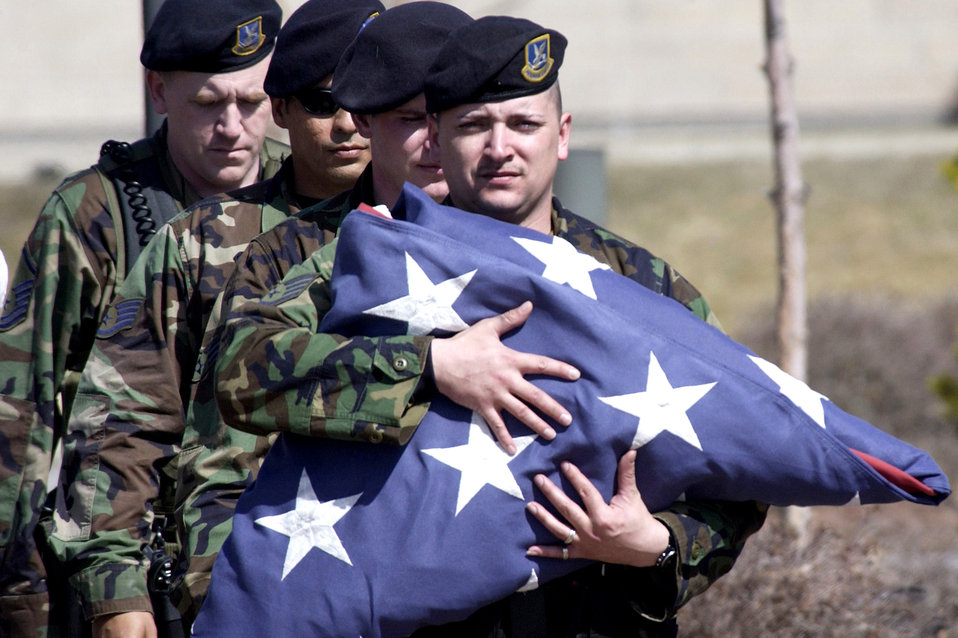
Retiring the flag

Staff Sgt. John Johnson carries a garrison flag away from the flagpole in Medal of Honor Park at Malmstrom Air Force Base, Mont., on Friday, March 31, 2006. The flag was replaced in order to be repaired. Sergeant Johnson is with the 341st Security Forces Squadron.